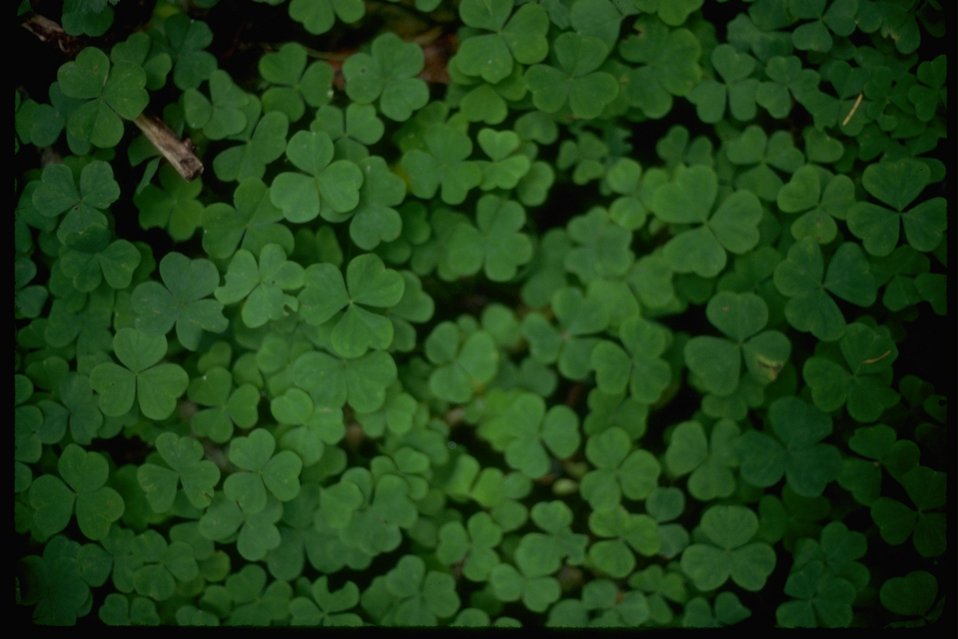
Wood Sorrel (Oxaus Oregana)